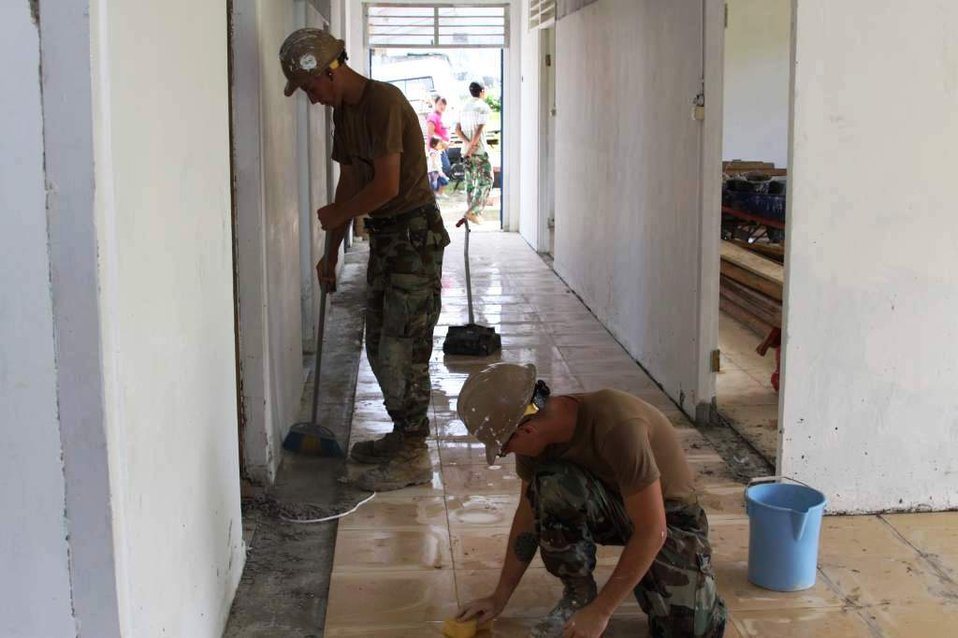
Constructionman Steelworker Kenneth Ward and Constructionman Builder Matthew Ernst Prepare the Floor for New Tile at the Daruba Hospital Engineering Site

Constructionman Steelworker Kenneth Ward and Constructionman Builder Matthew Ernst, assigned to Naval Mobile Construction Battalion (NMCB) 11 out of Gulfport, Mississippi, prepare the floor for new tile at the Daruba Hospital engineering site on July 12, 2010, Morotai, Indonesia. The engineering project is part of Pacific Partnership 2010, the fifth in a series of annual U.S. Pacific Fleet humanitarian and civic assistance endeavors to strengthen regional partnerships.